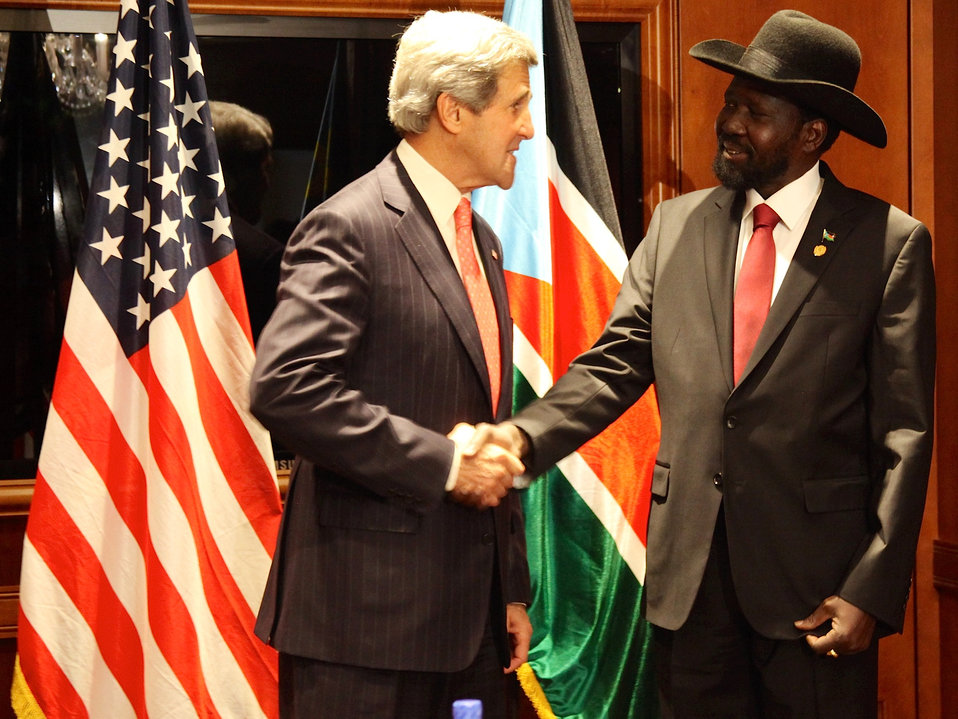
Secretary Kerry Meets With South Sudan President Kiir

U.S. Secretary of State John Kerry meets with South Sudan President Salva Kiir before the conclusion of the 50th anniversary African Union Summit in Addis Ababa, Ethiopia, on May 26, 2013.